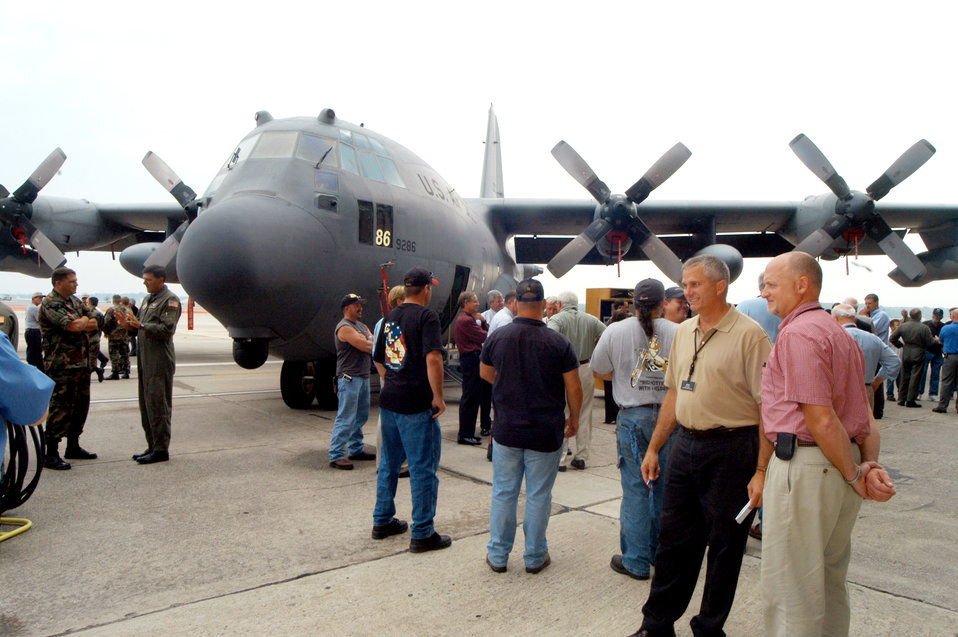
Highly modified C-130 ready for war on terrorism

The first-of-its-kind MC-130W was presented to Air Force Special Operations Command in a ceremony at Robins Air Force Base, Ga., on Wednesday, June 28. The highly modified C-130 will replace special operations aircraft lost in combat.